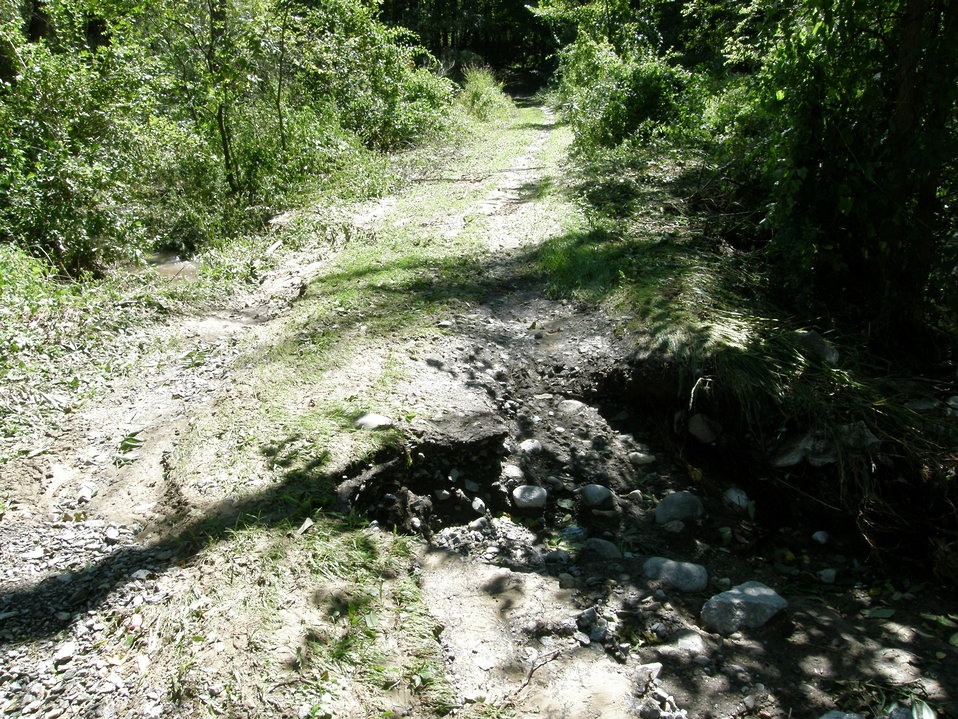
Hurricane Damage at Wallkill River National Wildlife Refuge August 30, 2011

Damage to Dagmar Dale Trail, Sussex, NJ.